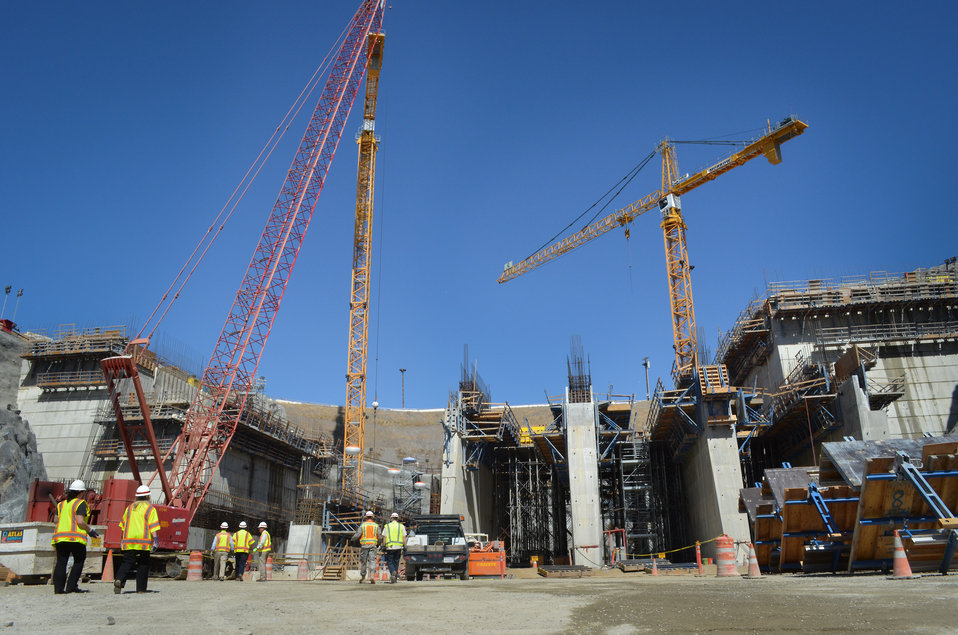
Construction continues on the control structure of Folsom Dam’s new auxiliary spillway June 17, 2013, in Folsom, Calif. The control structure, essentially a second dam, will work with the main dam to release water from the reservoir during large storms.